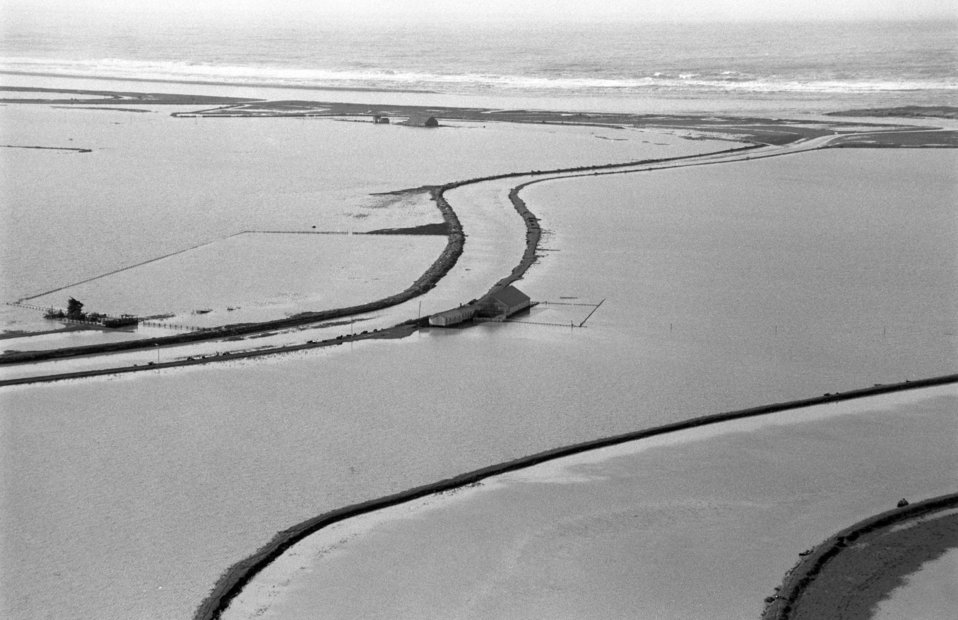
Farms were flooded in the Sacramento River Basin on January 13, 1995. The storm drainage system of the Sacramento River Basin failed, which resulted in extensive flooding of the region.